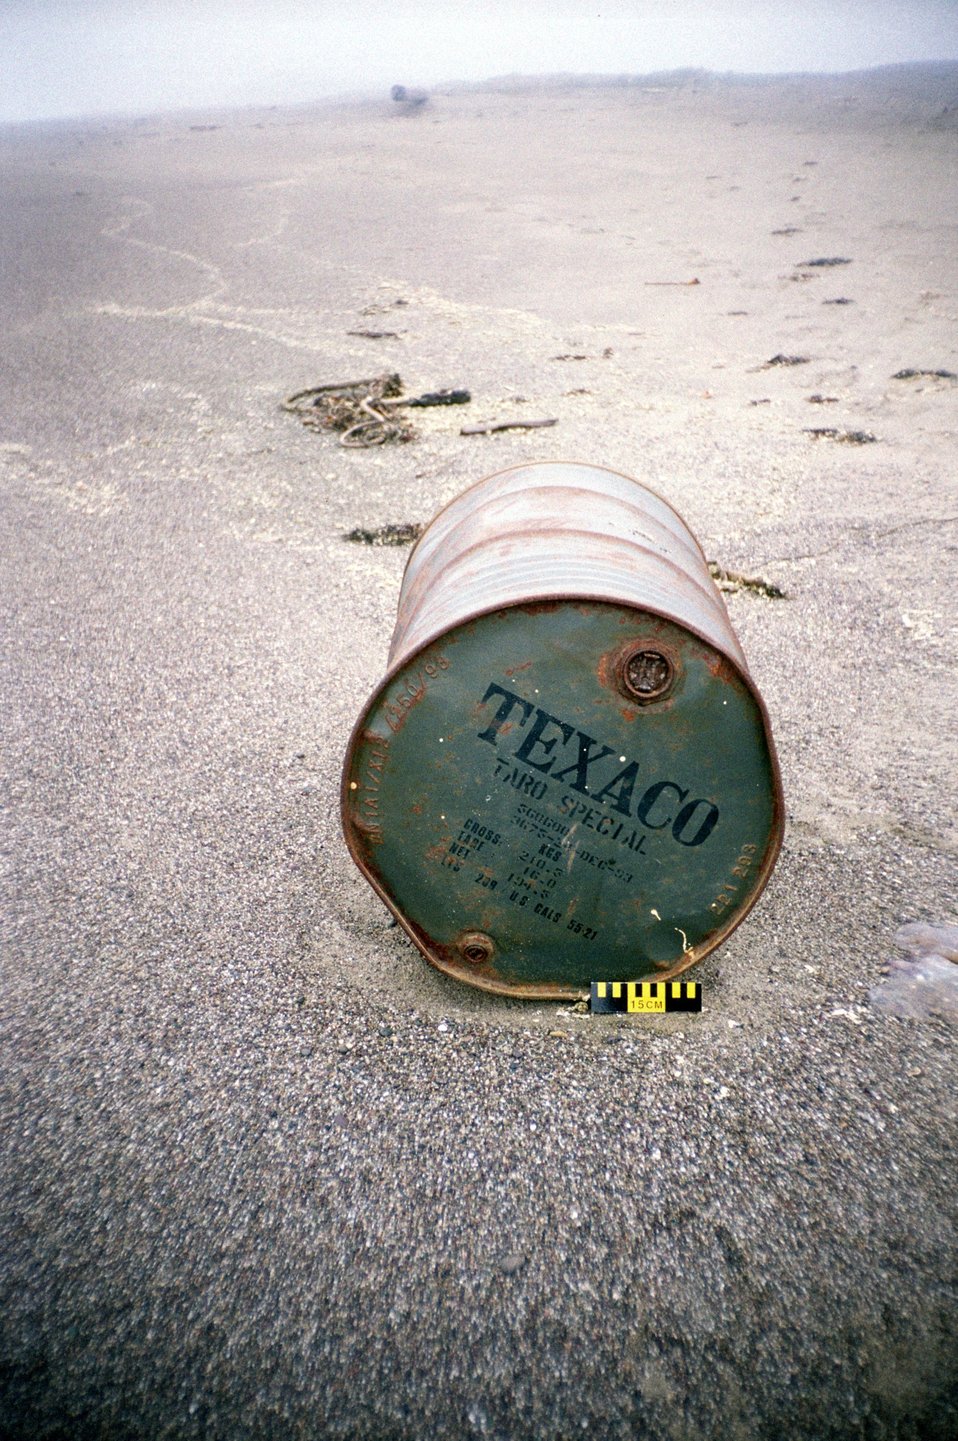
Point Reyes Great Beach south end. Marine debris oil or chemical drum washed up on beach at approximate high tide line.